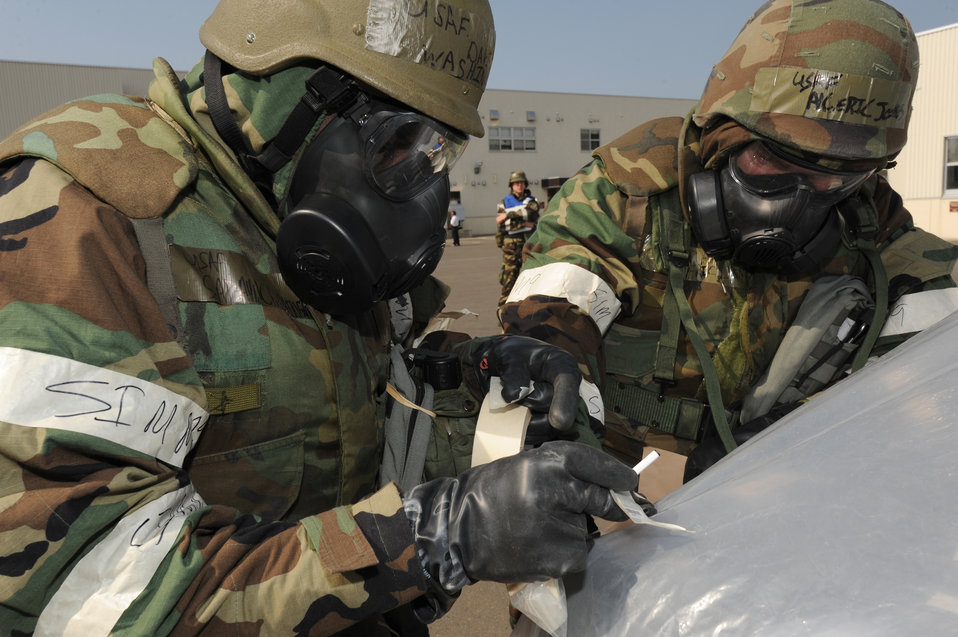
Simulated attack training exercise

Senior Airman David Washington (left) and Airman 1st Class Eric Jones check for